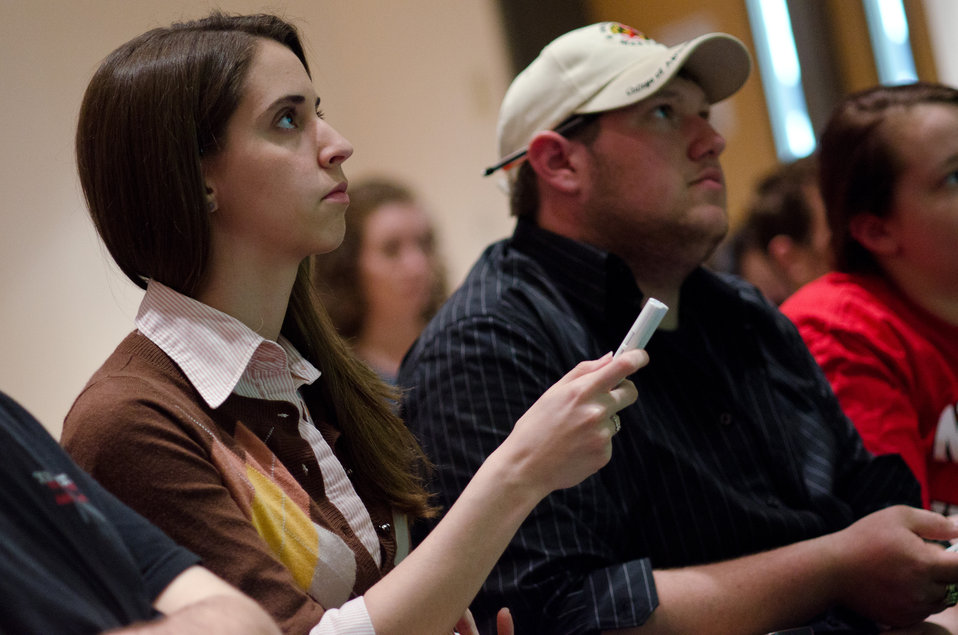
University of Maryland Senior Victoria Lake and others in the audience used wireless polling devices during U.S. Department of Agriculture's (USDA) Deputy Secretary Kathleen Merrigan's presentation of the “Know your Farmer Know your Food” initiative to students and faculty at the Animal Sciences / Agricultural Engineering Building at the University of Maryland, in College Park, MD, on Thursday, April 7, 2011. Deputy Secretary Merrigan’s interactive presentation utilized wireless polling in the lecture room to present questions to the audience who used handheld devices to choose from a list of multiple answers. Their answers were instantly tabulated, then Merrigan revealed their top choice on the screen, followed by the correct answer, usually revealing an error and misconceptions. Her talk covered support of local farmers; strengthening rural communities, promoting healthy eating, protecting natural resources; grants, loans and other support USDA provides as well as stories of innovation; industry and government cooperation; and careers opportunities in agriculture, ranching and the USDA.